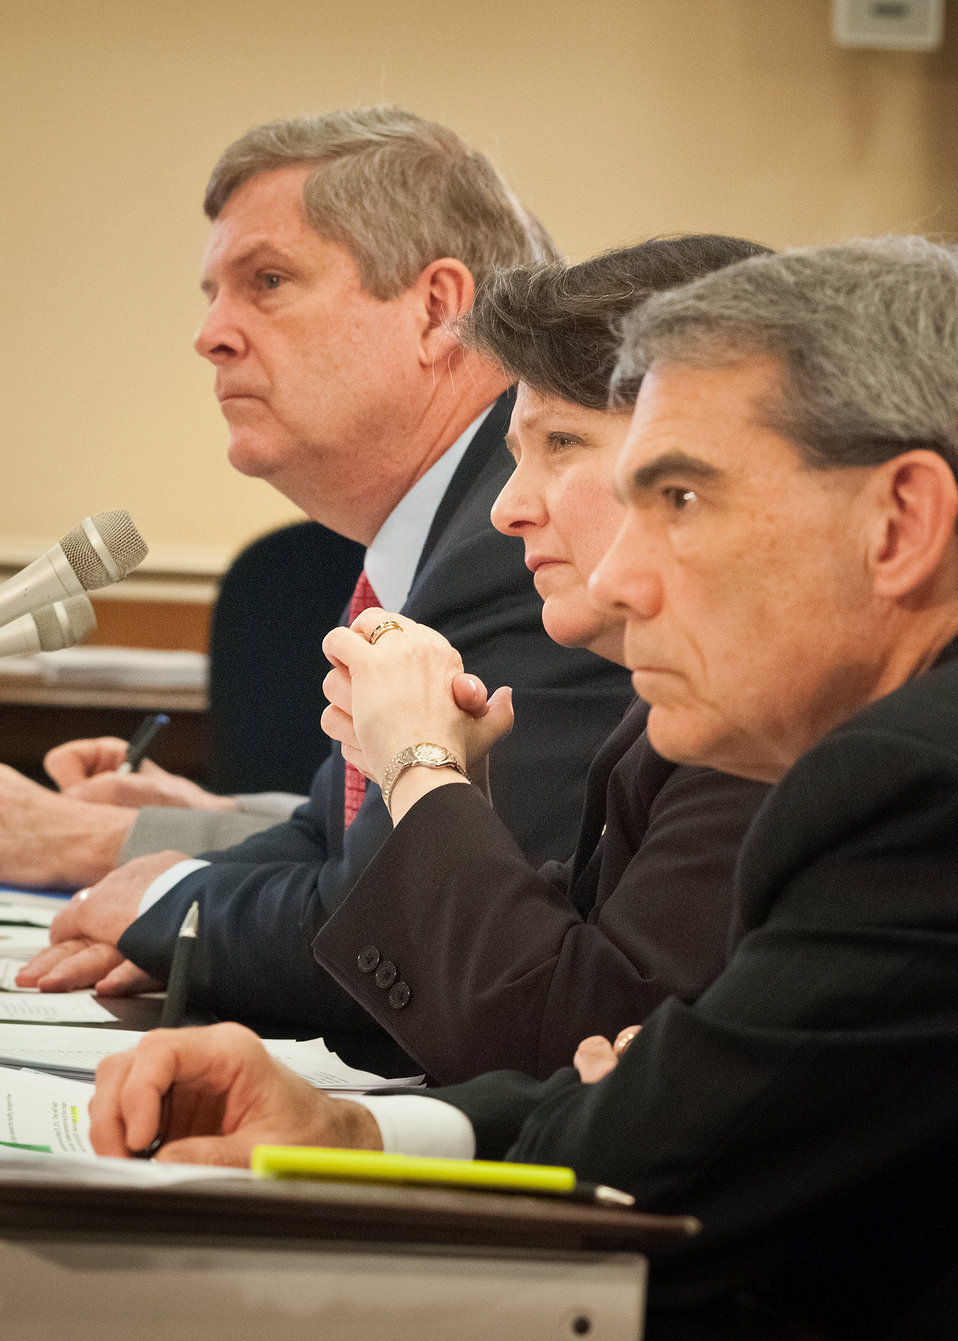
From left: Agriculture Secretary Tom Vilsack, Dr. Kathleen Merrigan, Deputy Secretary and Michael Young Budget Officer listen to questions posed by members of the House Agriculture Appropriations Committee to discuss the United States Department of Agriculture budget in the Rayburn House Office Building Friday, February 17, 2012 in Washington, DC.